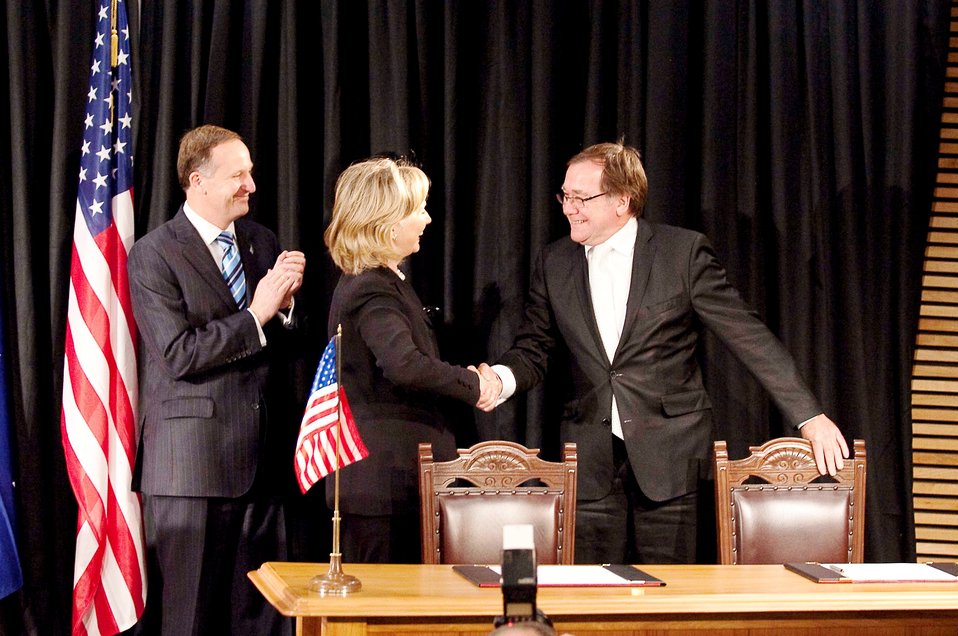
Secretary Clinton Shakes Hands With New Zealand Foreign Minister McCully After Signing the “Wellington Declaration”

U.S. Secretary of State Hillary Rodham Clinton shakes hands with New Zealand Foreign Minister Murray McCully as New Zealand Prime Minister John Key looks on after the signing of the “Wellington Declaration” in Wellington, New Zealand, on November 4, 2010.